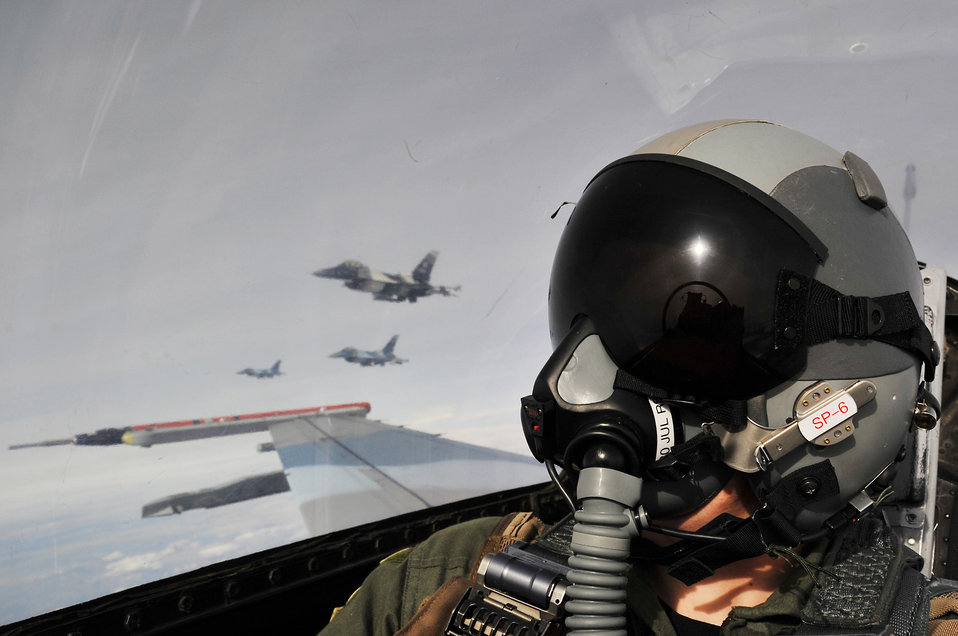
On the prowl

Playing the